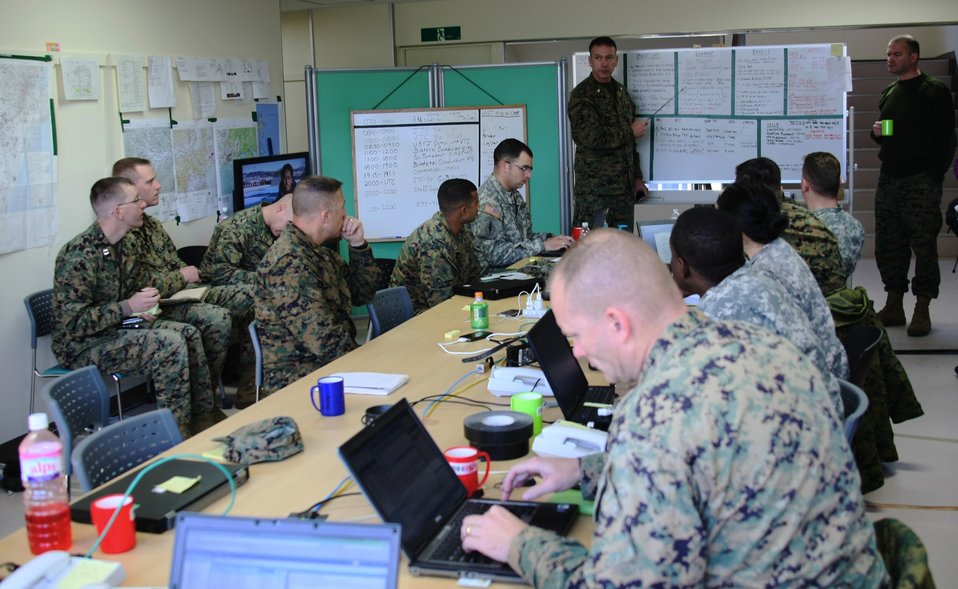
Disaster Relief Support

Members of the USFJ Forward in the Command Center at Camp Sendai having the morning briefing.